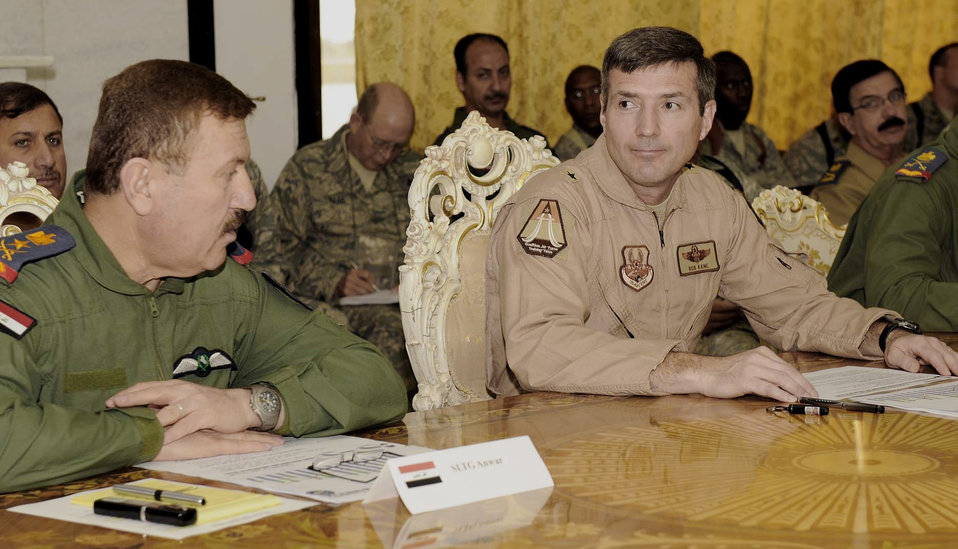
Operation Iraqi Freedom

The Iraqi air force Commander, Staff Lieutenant General Anwar, and Brig. Gen. Robert Kane talk during the joint commanders' conference at Camp Victory, Iraq, May 20. General Kane is the 321st Air Expeditionary Wing and Coalition Air Force Training Team commander.